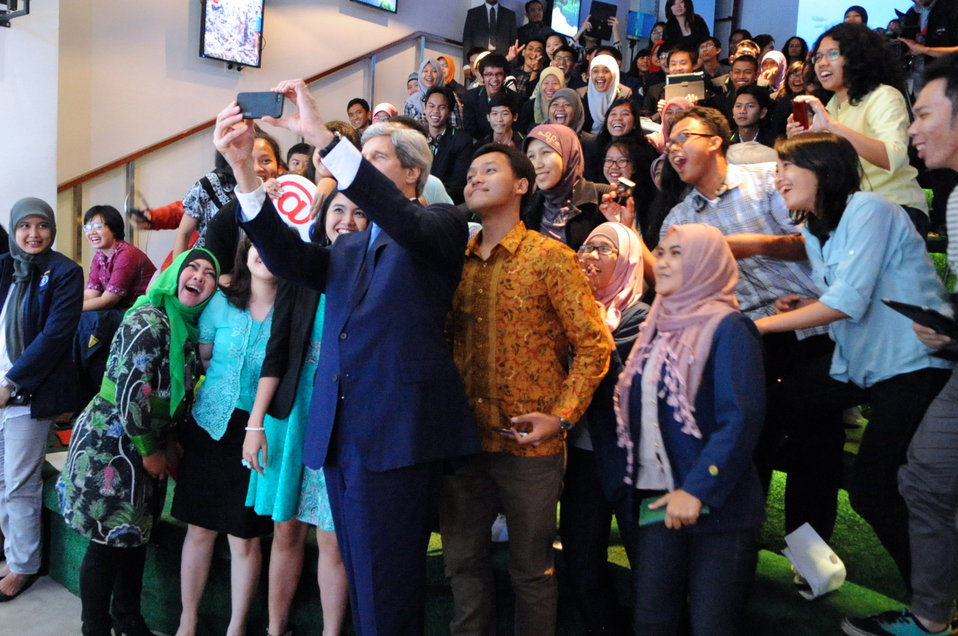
Secretary Kerry Takes 'Selfie' With Students at Climate Change Speech in Jakarta

U.S. Secretary of State John Kerry takes a 'selfie' on a smartphone with students attending a climate change speech he delivered in Jakarta, Indonesia, on February 16, 2014.